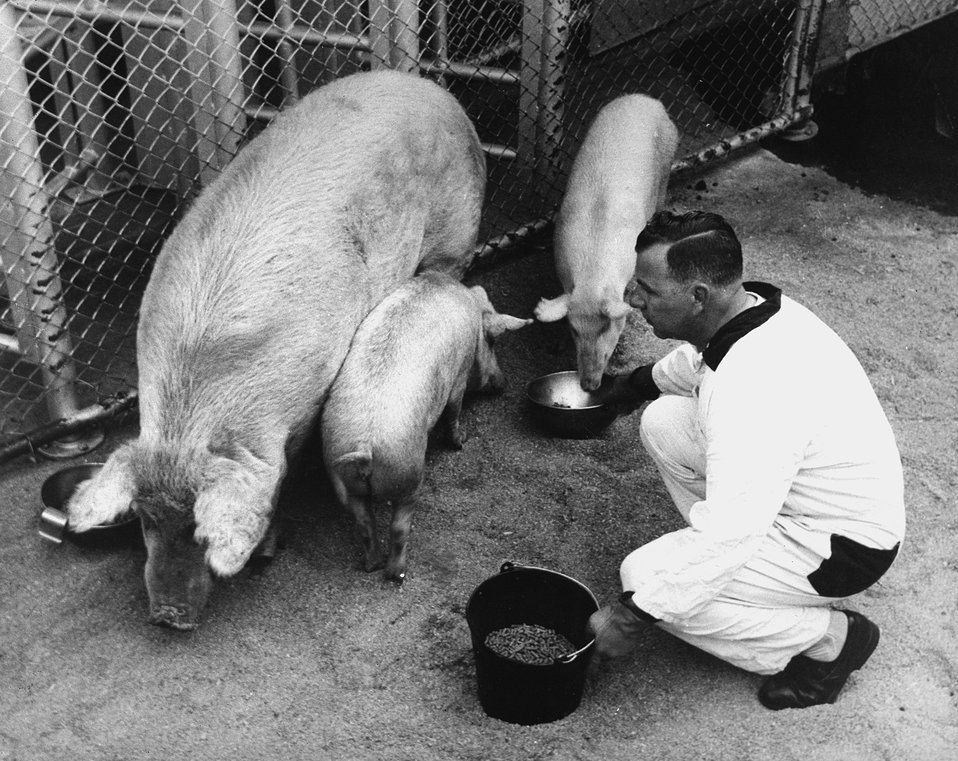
A Palouse Swine and two Hanford Miniatures are being fed at the Pacific Northwest Laboratory's animal quarters near Richland, Washington. c. 1966